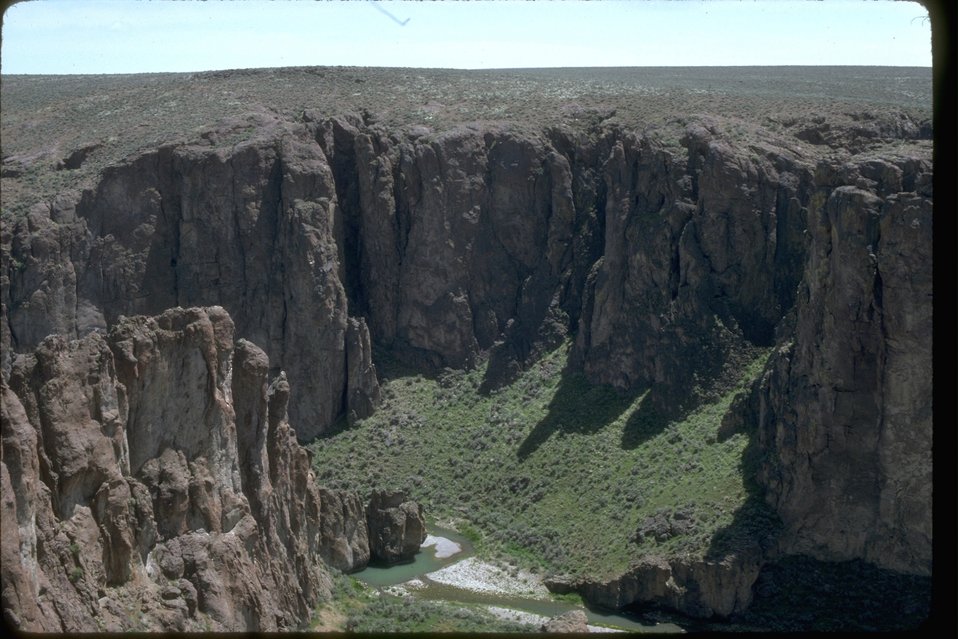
Rim view of Upper Little West Owyhee Canyon and River below. OR 3-173